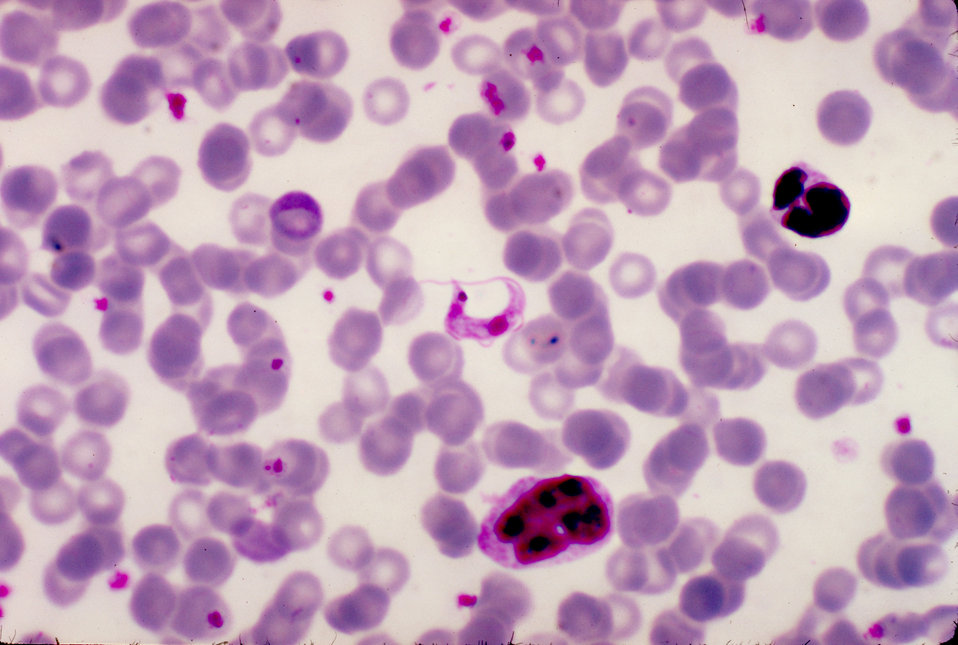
This is a micrograph of Trypanosoma cruzi in a blood smear using Giemsa staining technique.